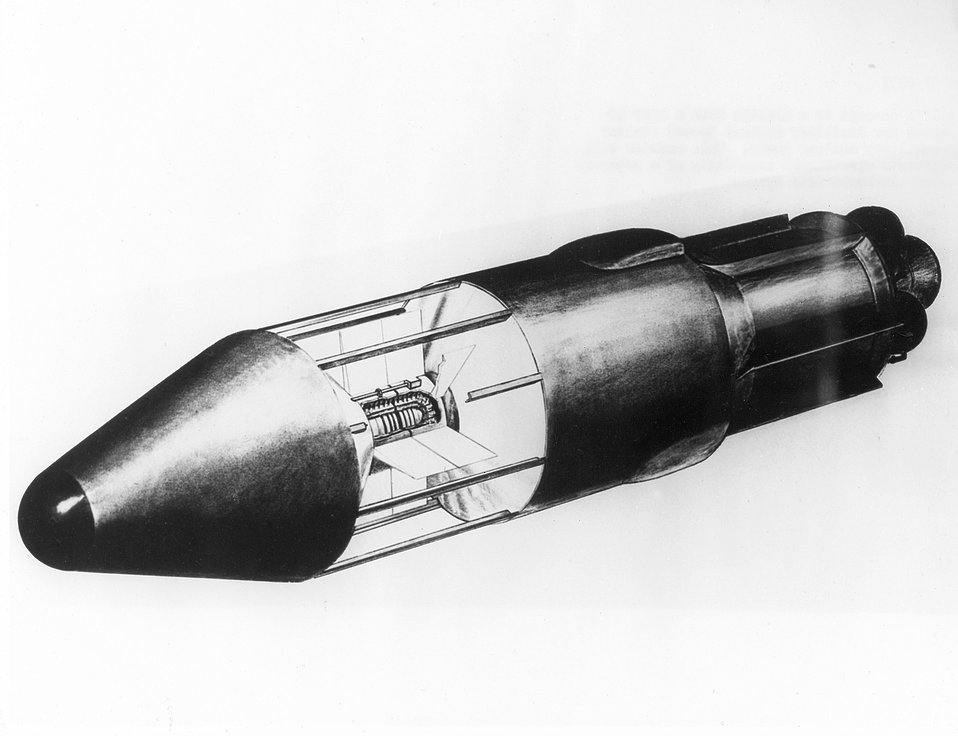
Artist's concept of a missile with a SNAP 10 reactor for auxiliary nuclear power.